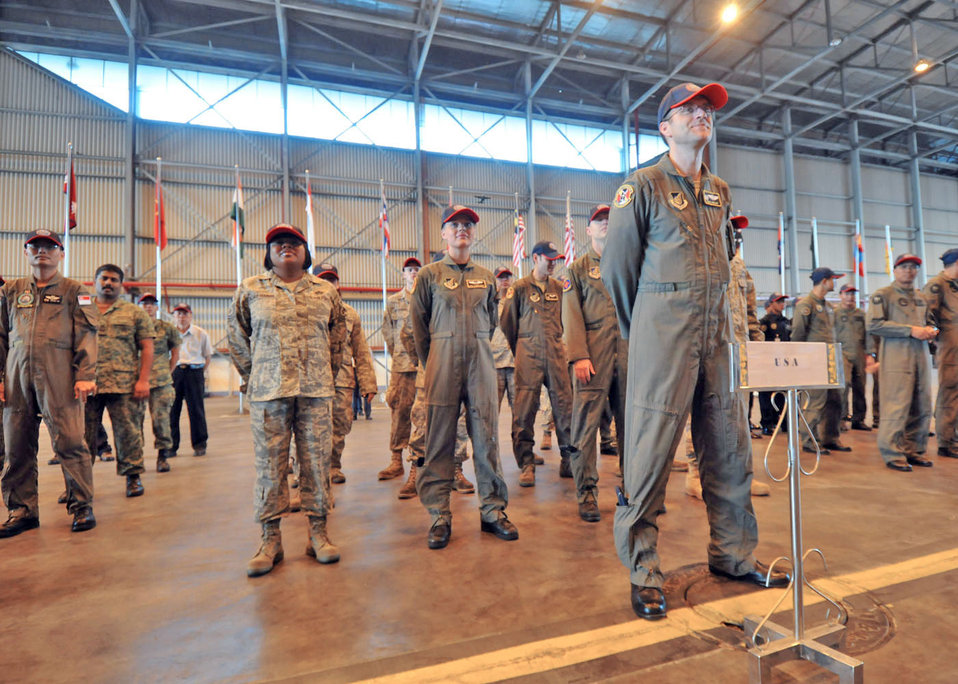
Pacific Airlift Rally 2009 kicks off

Lt. Col. David Kincaid leads a formation of 36th Airlift Squadron, 374th Operations Support Squadron and 374th Maintenance Squadron Airmen from Yokota Air Base, Japan, during the Pacific Airlift Rally 2009 opening ceremony Aug.18 at Subang Royal Mayaysian Air Force Base, Malaysia. Colonel Kincaid is the 36th AS commander.